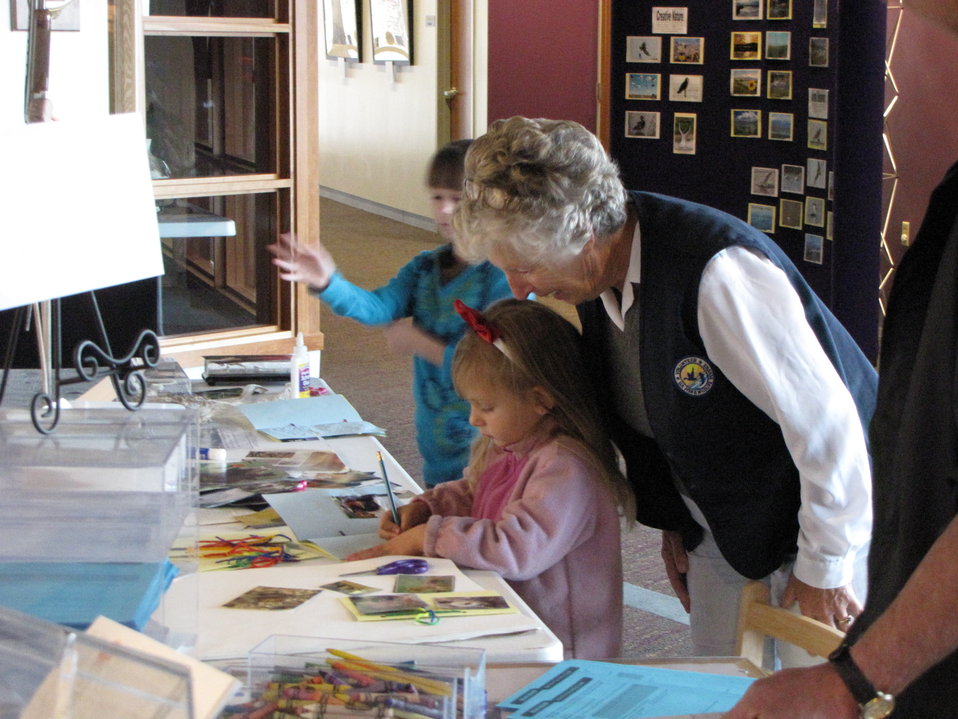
Fun for the Family!

Volunteer, June Bywater, helps children with fun crafts fun during National Wildlife Refuge Week, 2010.